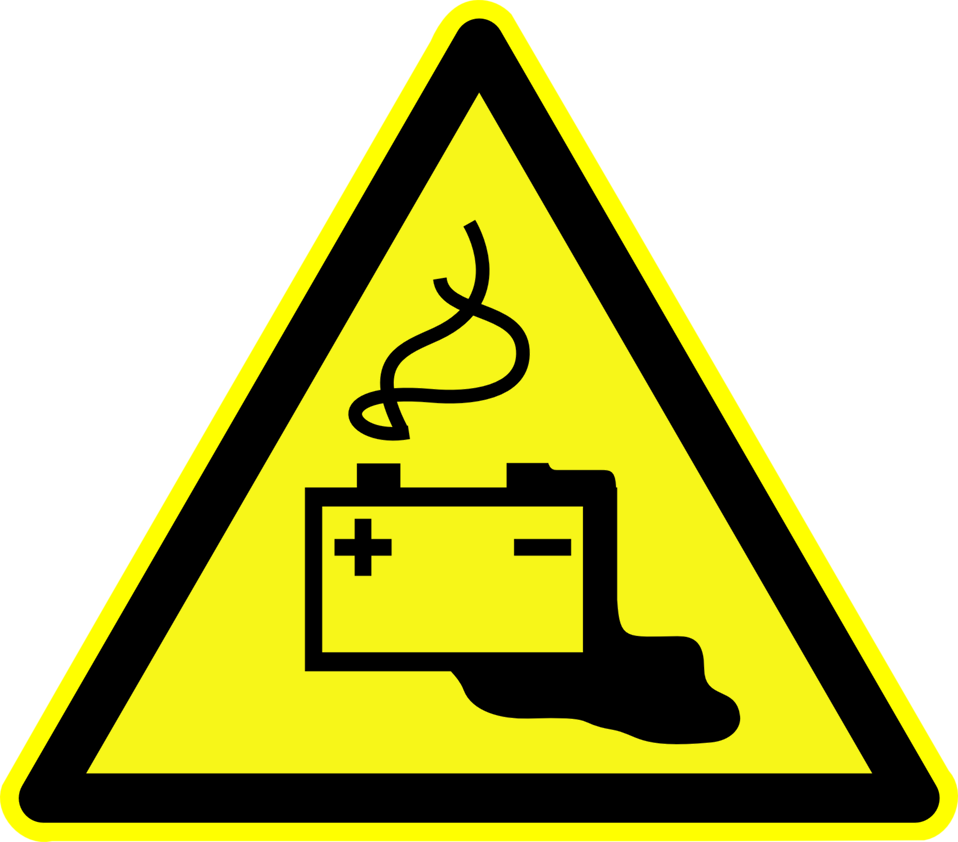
Deutsch: Warnung vor Gefahren durch Batterien, Warnzeichen D-W020 nach DIN 4844-2 Danger from batteries, warning sign D-W020 according to German standard DIN 4844-2